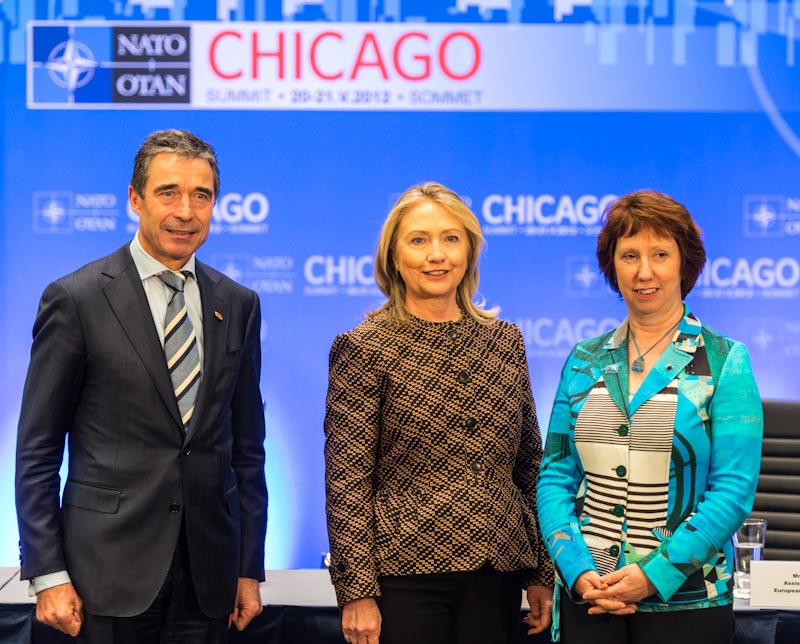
Secretary Clinton Participates in the US-NATO-EU Trilateral Meeting With EU High Representative Ashton and NATO Secretary General Rasmussen

U.S. Secretary of State Hillary Rodham Clinton participates in the US-NATO-EU trilateral meeting with European Union High Representative Catherine Ashton, right, and NATO Secretary General Anders Fogh Rasmussen, left, in Chicago, Illinois, on May 20, 2012.